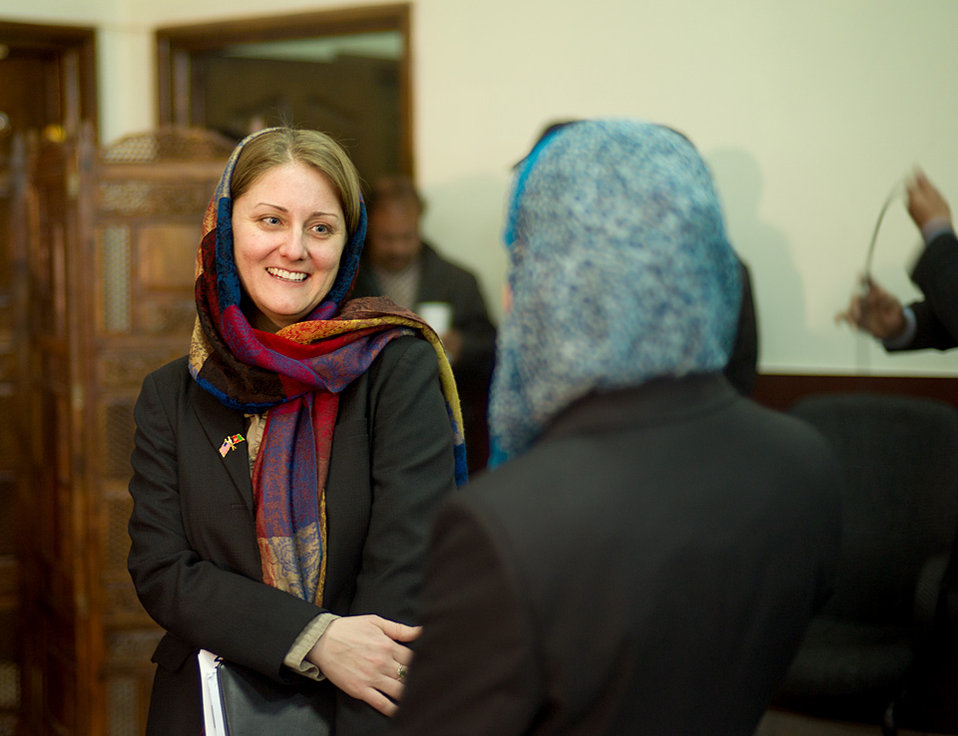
Image 13 3:18:12